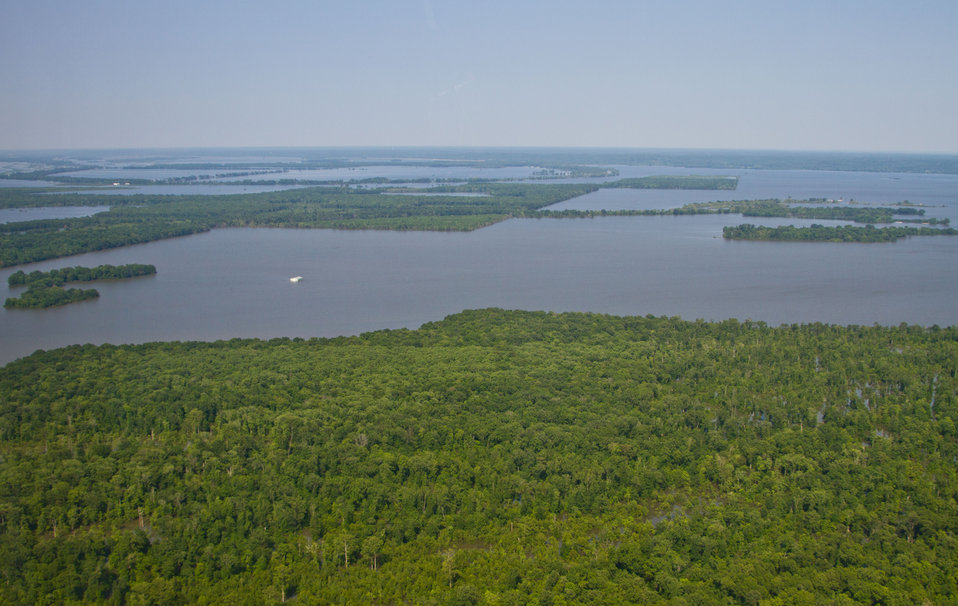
Aerial view of Mississippi River flood of farms, wilderness, and populated areas, on Thursday, May 19, 2011. from the MS side. Aerial platform was a UH-60 Blackhawk commanded by Col. Kennedy and his flight crew from the Army Aviation Support Facility #1 at Hawkins Field in Jackson, MS.